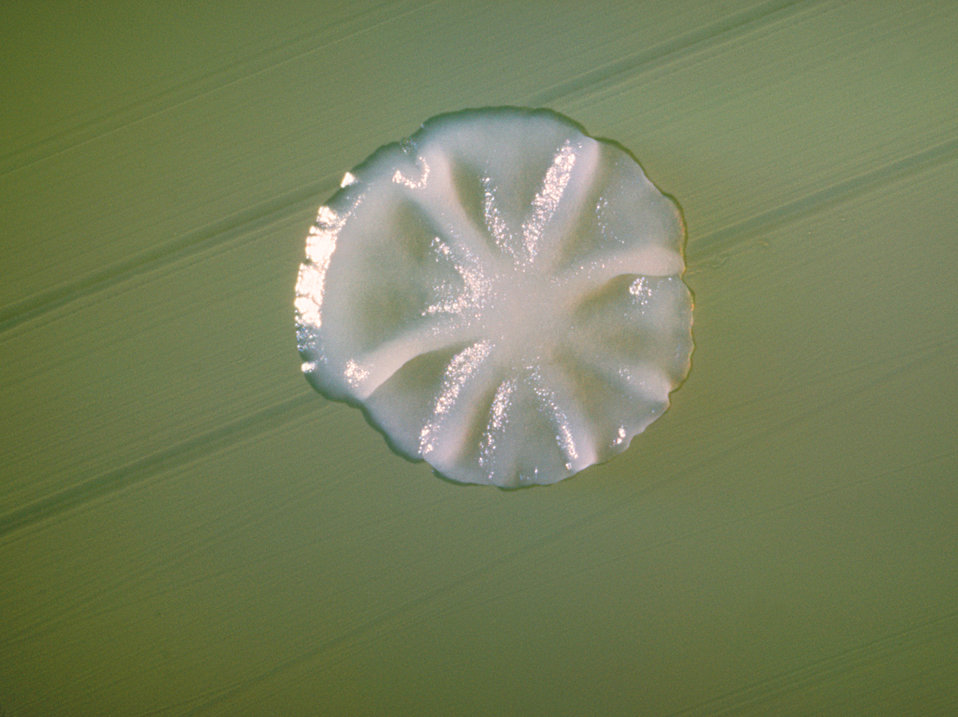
Plate culture of Actinomyces sp., a Gram positive opportunistic pathogen that is normally found in the oral cavity.